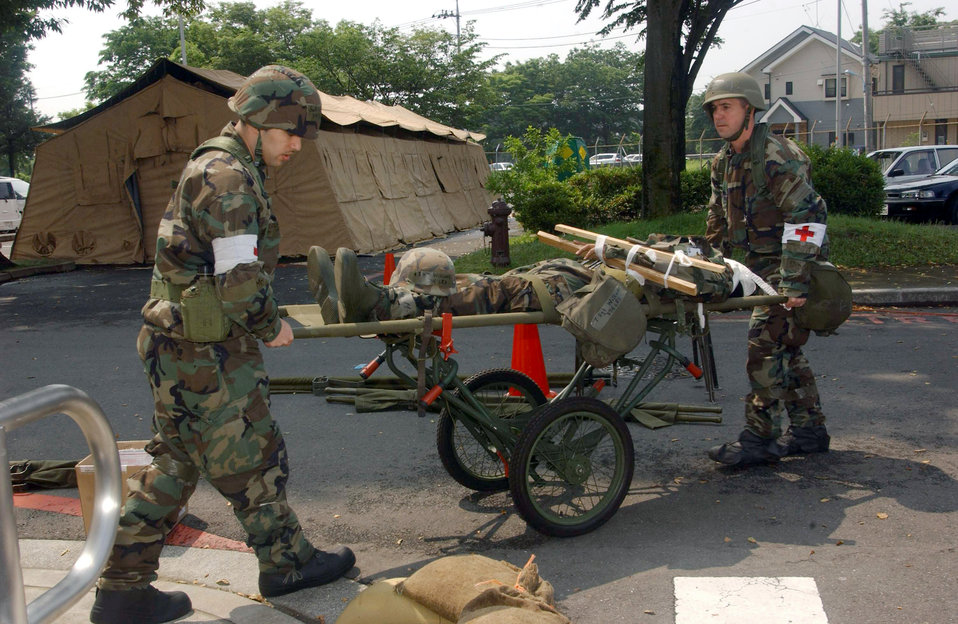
Readiness exercise

YOKOTA AIR BASE, Japan -- Airman 1st Class Carlos Claudio, (left), and Capt. Anthony Jarecke, both members of the base's 374th Medical Group use a gurney to transport a